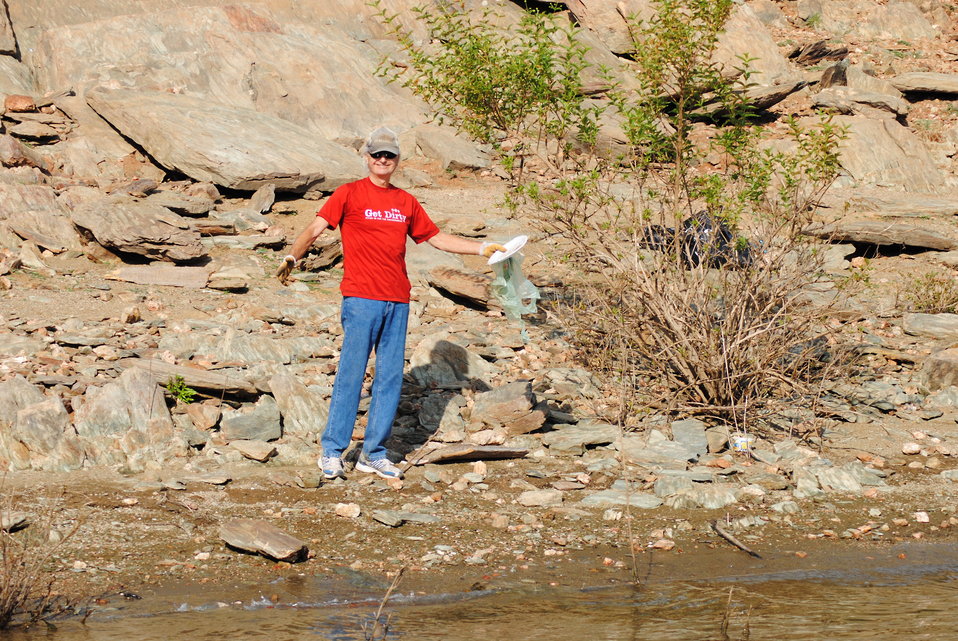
National Public Lands Day at New Hogan Lake

A volunteer collects litter at the shoreline of New Hogan Lake near Valley Springs, Calif., Sept. 24. More than 200 volunteers planted 60 trees, picked up over 1,000 pounds of trash, painted over graffiti, rebuilt two horseshoe pits and installed irrigation lines at New Hogan in celebration of National Public Lands Day. New Hogan was one of seven U.S. Army Corps of Engineers Sacramento District recreation parks that participated in the event.